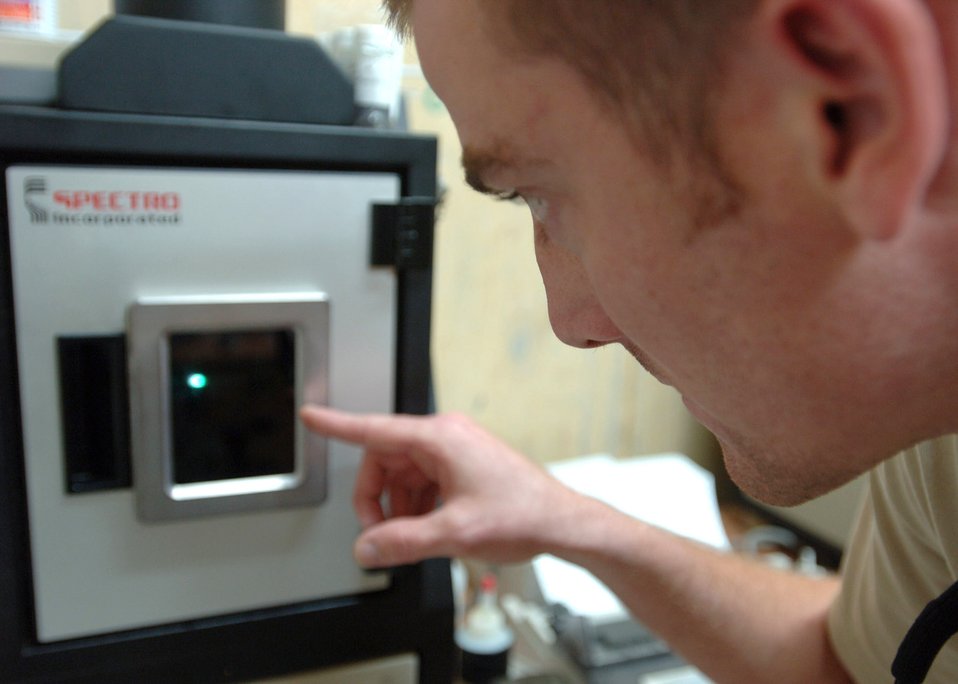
Checking the burn

Staff Sgt. Anthony Phillips observes readings as oil from an A-10 Thunderbolt II burns in a spectrometer at Al Asad Air Base, Iraq. The spectrometer analyzes the burning engine fluid for contaminants that would signify wear and tear to the aircraft's engines. Sergeant Phillips is a nondestructive inspections technician with the 438th Expeditionary Aircraft Maintenance Squadron, and is deployed from the Kentucky Air National Guard's 123rd Tactical Airlift Wing.